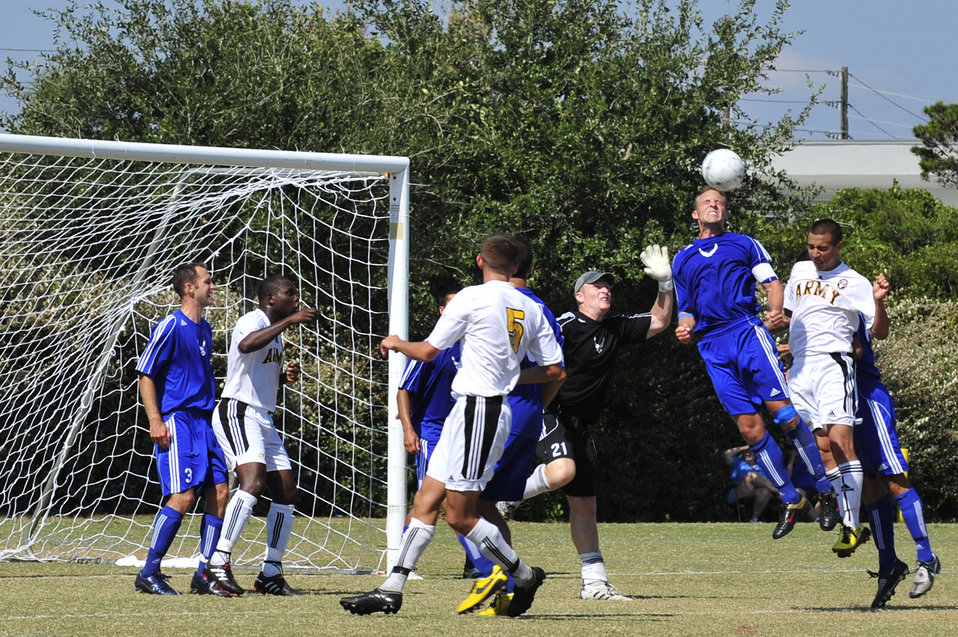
Quick thinking

Capt. Thomas Petykowski, a defender for the Air Force soccer team, heads the ball during an Armed Forces Men's Soccer Championship semifinal match against the U.S. Army at Morgan Sports Complex Oct. 23, 2010, in Destin, Fla. Captain Petykowski is stationed at Dover Air Force Base, Del.